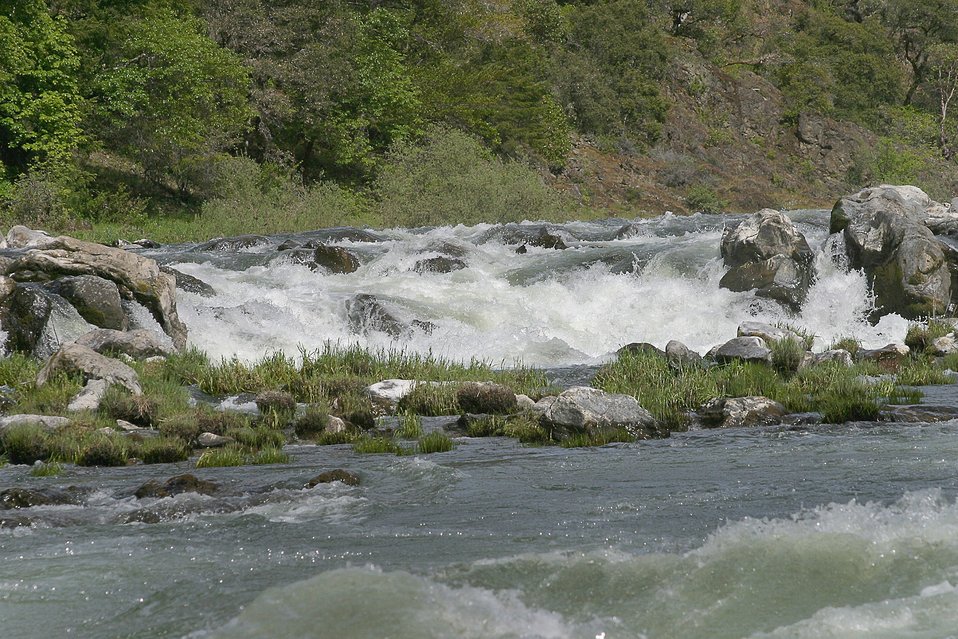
Rainie Falls on the Wild section of the Rogue River from Grave Creek to Foster Bar. 3100 cfs at Grants Pass and 5300 at Agness.